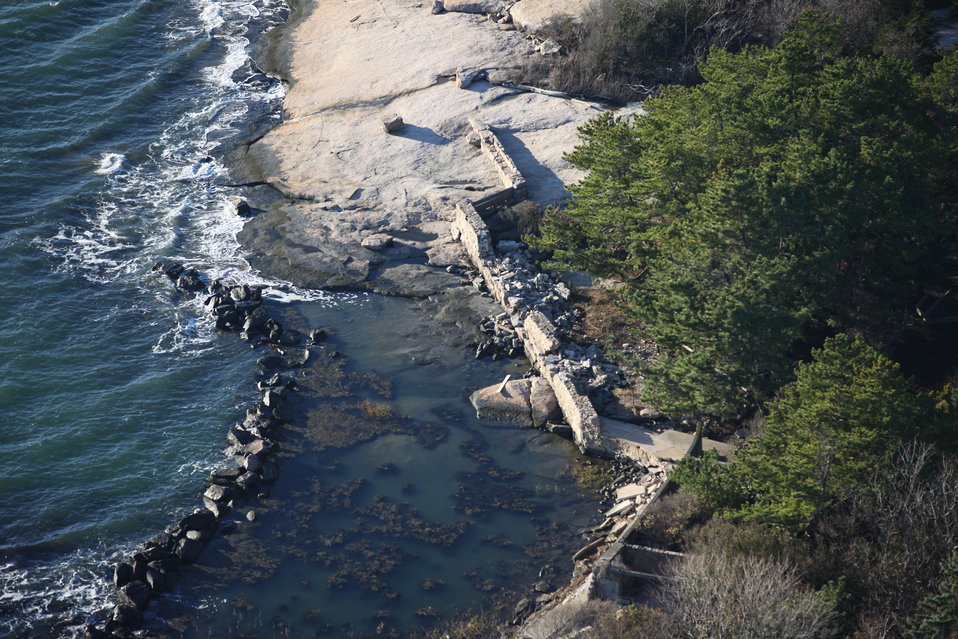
Stewart B. McKinney National Wildlife Refuge-Outer Island (CT)

An aerial view of damage from storm Sandy on Outer Island at the Stewart B. McKinney National Wildlife Refuge.